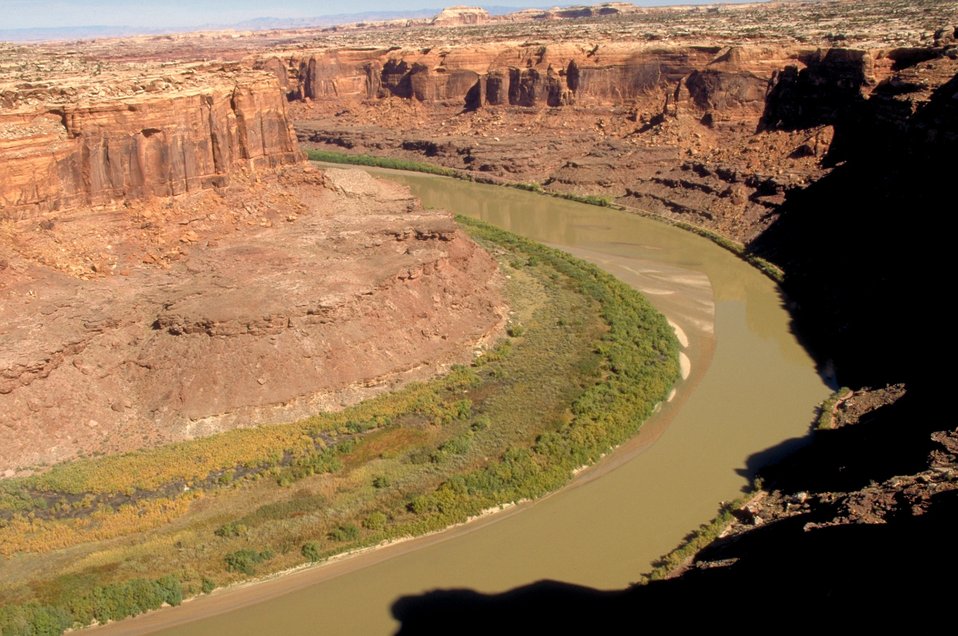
Green River at Bowknot Bend area near Moab, Utah.